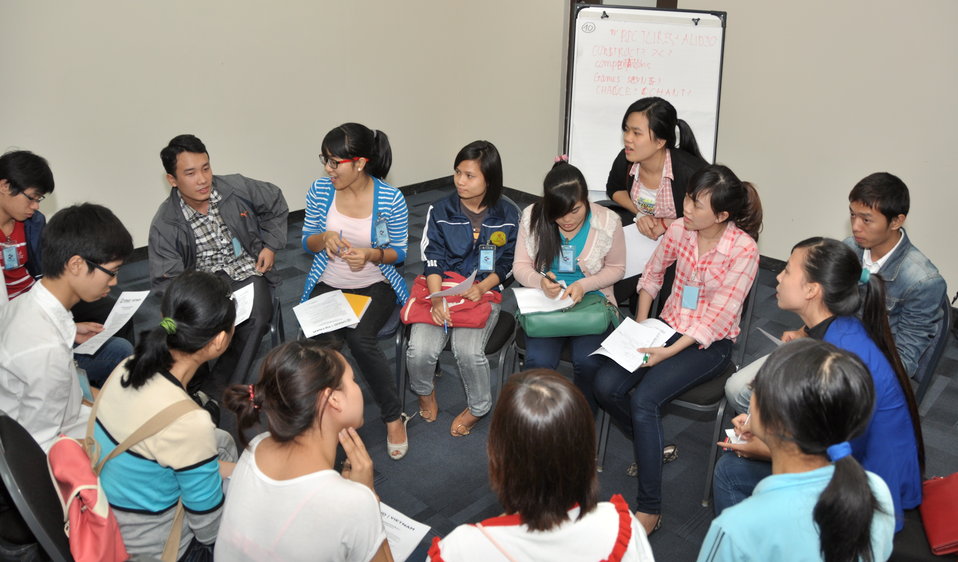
Students join the ‘USAID and Higher Education in Vietnam’ talk

Photo: @USAIDVietnam, November 19, 2012